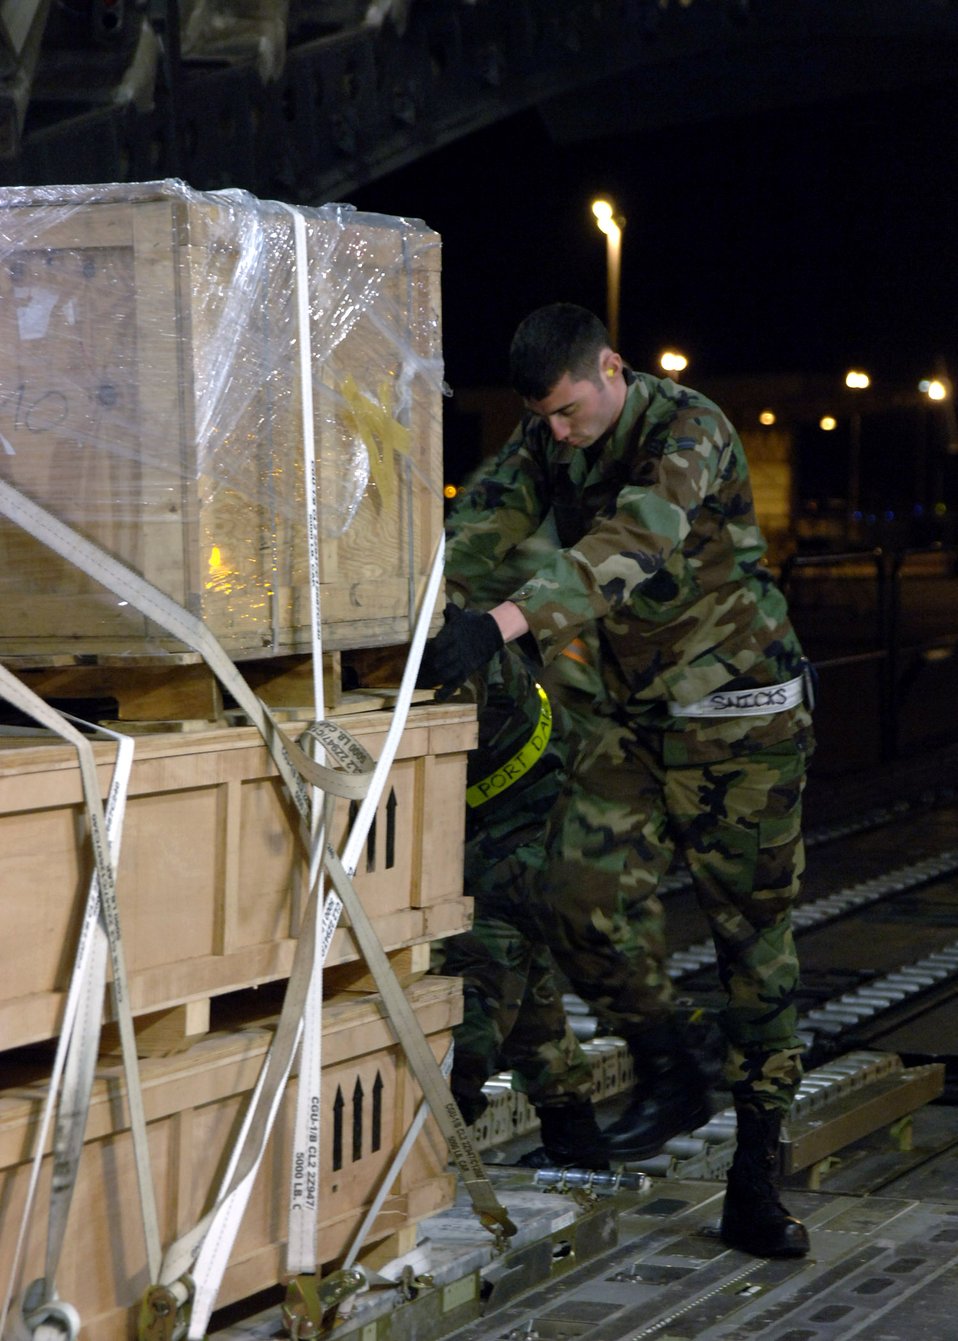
Turkey partners with U.S. in war on terrorism

Airman 1st Class Brian Pryor secures Turkish equipment onto a C-17 Globemaster III April 16 at Incirlik Air Base, Turkey. The equipment is being transported to Kabul AB, Afghanistan. Airman Pryor is a 728th Air Mobility Squadron load team member.